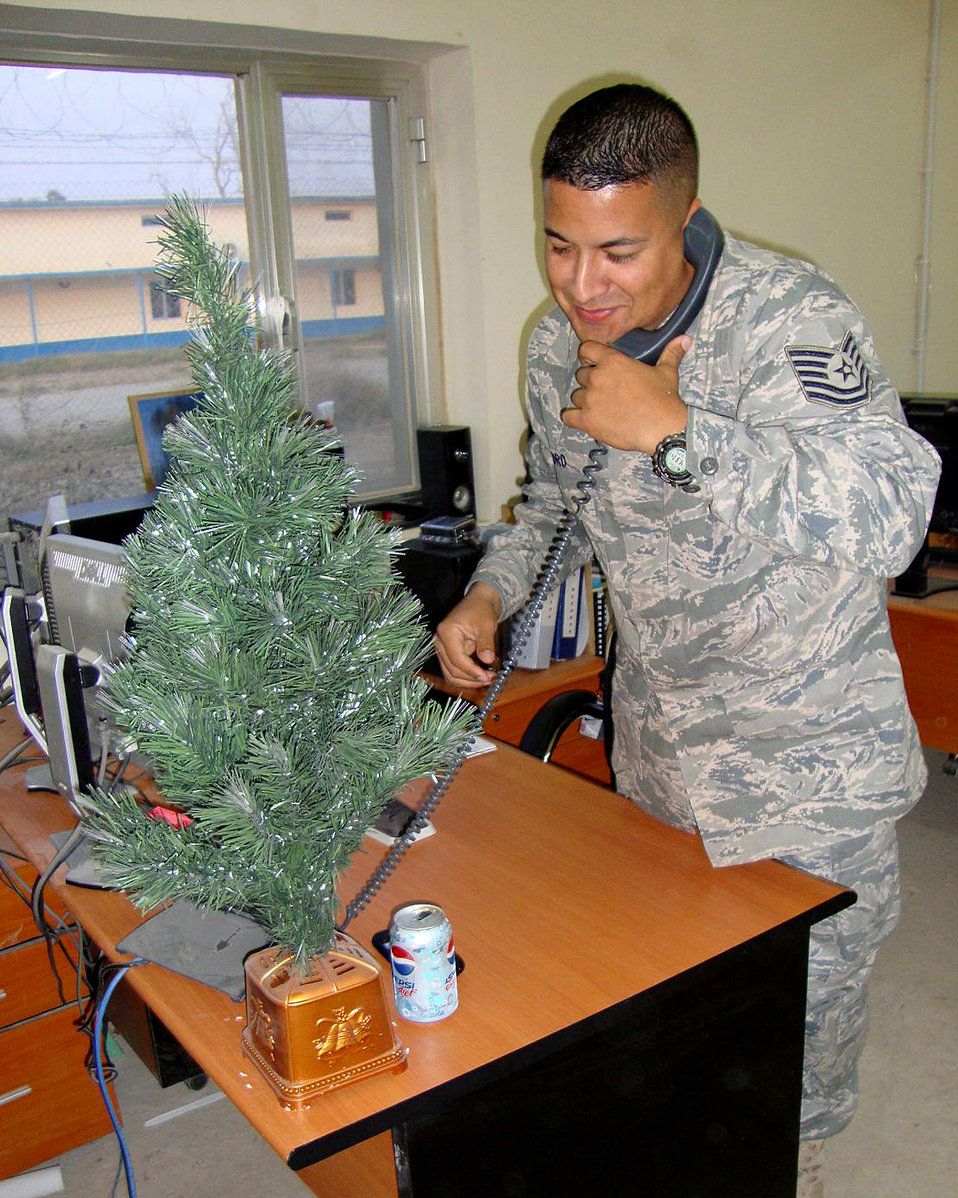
Who's calling?

Tech. Sgt. Donald Pedro, a fuels advisor with the 821st Air Expeditionary Advisory Squadron at Camp Taji, Iraq, chats with President Barack Obama Christmas Eve. The president called to wish him a merry Christmas and thank him for his service. Sergeant Pedro is deployed from Pope Air Force Base, N.C., and is a native of Pawtucket, R.I.